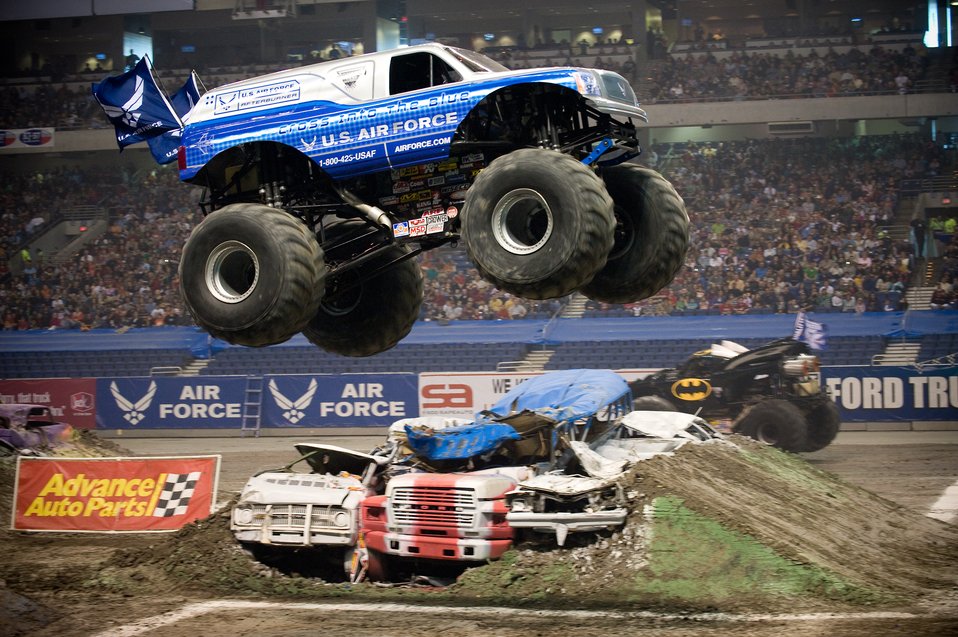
AF flies high at Monster Jam

Damon Bradshaw, in the Air Force Afterburner monster truck, soars through the air Jan. 11 during the Monster Jam at the Alamodome in San Antonio. Mr. Bradshaw took second with fast lap times and freestyle performances that had the crowd of approximately 45,000 up and cheering. Afterburner's 540 cubic-inch Merlin supercharged racing V-8 engine churns out 1,425 horsepower. Mr. Bradshaw, in his 3rd season, demonstrated that he had mastered the application of power by launching the 10,000-lb vehicle more than 40 feet in the air, thrilling the crowd. Afterburner is equipped with 66